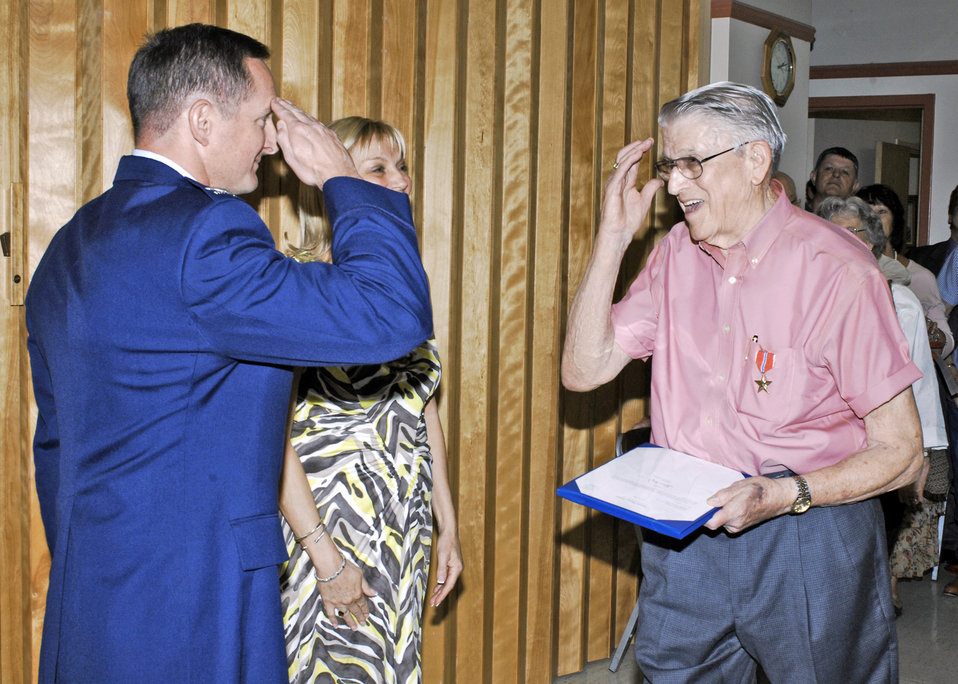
World War II vet honored on Father's Day

Col. Stephen Clark salutes Herman Wallace following the presentation of a Bronze Star Medal June 21 in Portales, N.M. In the center is Mr. Wallace's daughter, Linda Tripp, who pursued the forgotten award that recognized his service during World War II. Colonel Clark is the 27th Special Operations Command commander.